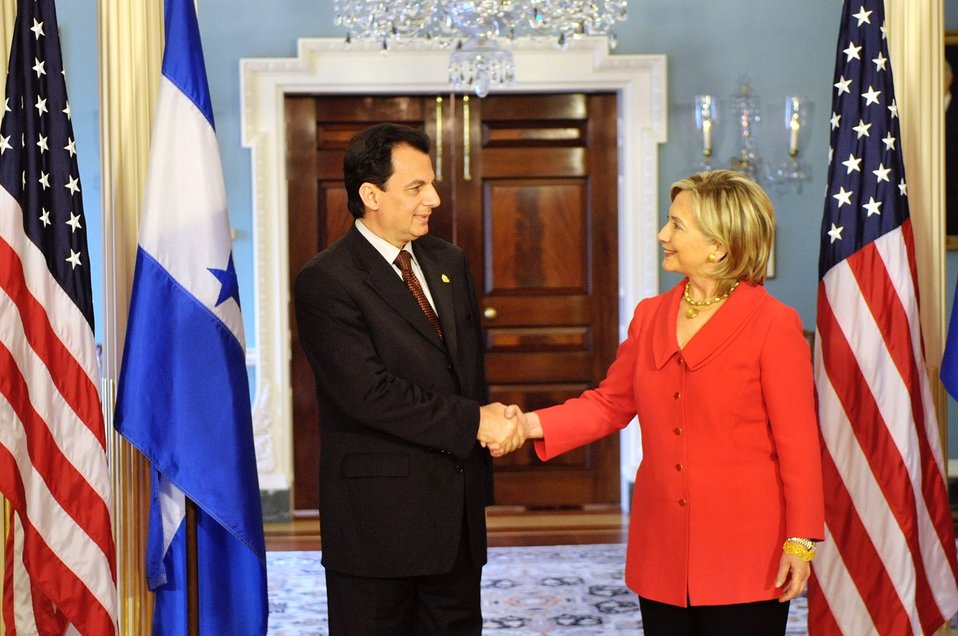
Secretary Clinton Shakes Hands With Honduran Foreign Minister Mario Canhuati

U.S. Secretary of State Hillary Rodham Clinton shakes hands with His Excellency Mario Canhuati, Secretary of Foreign Relations of the Republic of Honduras, in the Treaty Room at the U.S. Department of State, Washington, DC, April 28, 2010.